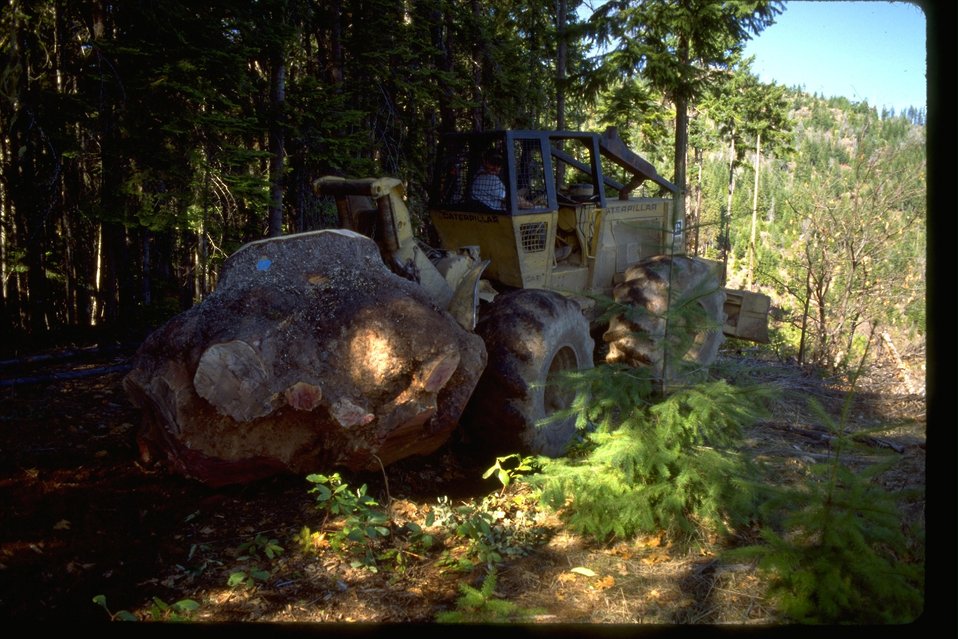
Large CAT pulling out a 7000lbs Madrone Burl from the ground.